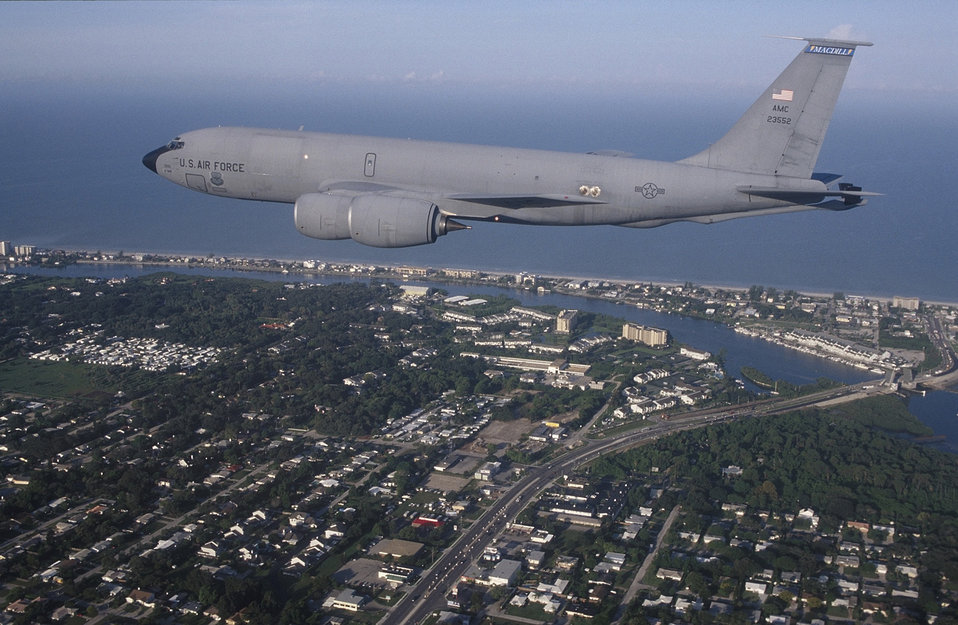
KC-135

FILE PHOTO -- The KC-135's principal mission is air refueling. This asset greatly enhances the U. S. Air Force's capability to accomplish its mission of Global Engagement. It also provides aerial refueling support to U.S. Navy, U.S. Marine Corps and allied aircraft. Four turbofans, mounted under 35-degree swept wings, power the KC-135. Nearly all internal fuel can be pumped through the tanker's flying boom, the KC-135's primary fuel transfer method. A special shuttlecock-shaped drogue, attached to and trailed behind the flying boom, may be used to refuel aircraft fitted with probes. An operator stationed in the rear of the plane controls the boom.